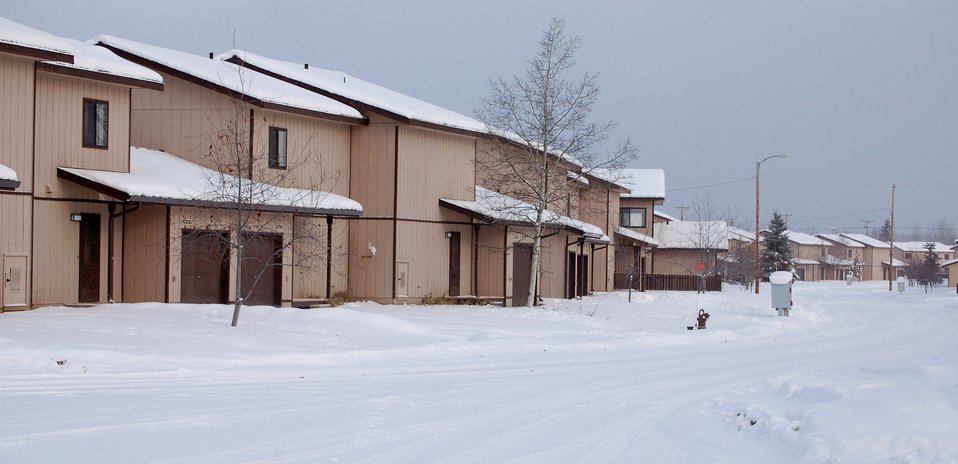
Eielson helps Airmen move into new homes in a hurry

More than 300 housing units sit empty in the Sprucewood Homes edition of base housing Feb. 27 at Eielson Air Force Base, Alaska. Three hundred Air Force families had to be moved out of the privatized housing into new housing from September to December. The reason for the move was due to a conclusion of a privatized housing contract that wasn't able to be renegotiated.